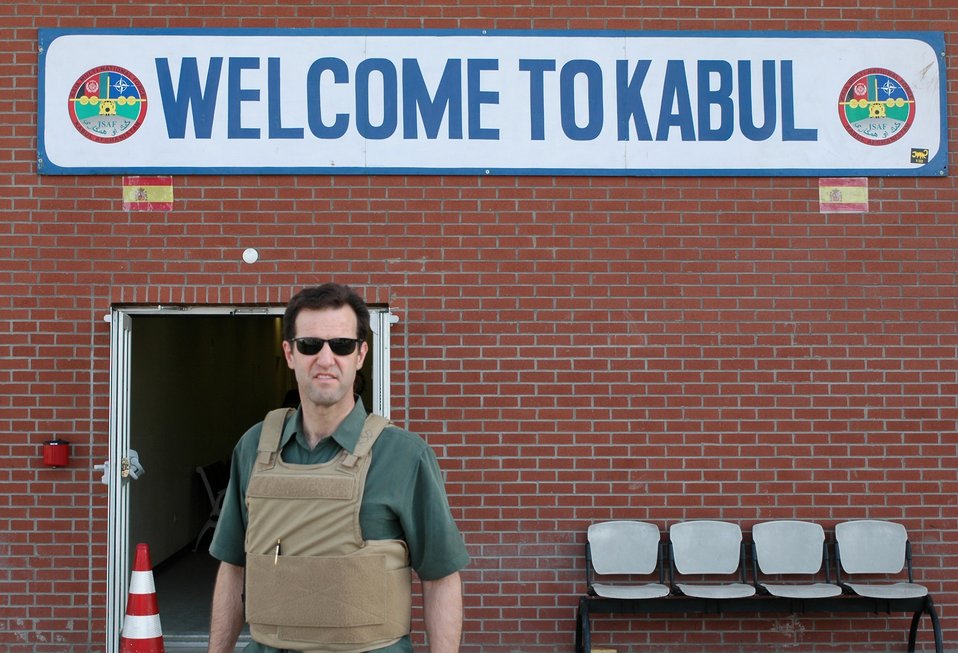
CODEL Berman